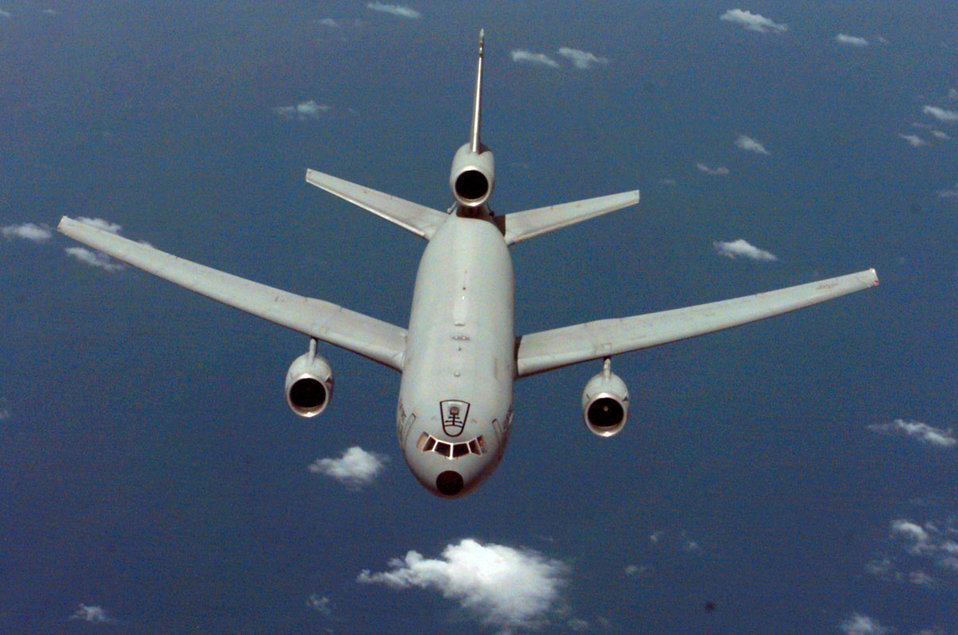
KC-10A Extender

FILE PHOTO -- A KC-10A Extender from the 6th Air Refueling Squadron, Travis Air Force Base, Calif., cruises on a mission while deployed to the 2nd Air Expeditionary Group, Naval Station Diego Garcia. Although the KC-10A's primary mission is aerial refueling, it can combine the tasks of tanker and cargo aircraft by refueling fighters while carrying the fighters' support people and equipment during overseas deployments. The KC-10A can transport up to 75 people and about 170,000 pounds of cargo a distance of about 4,400 miles. Without cargo, the KC-10A's unrefueled range is more than 11,500 miles.